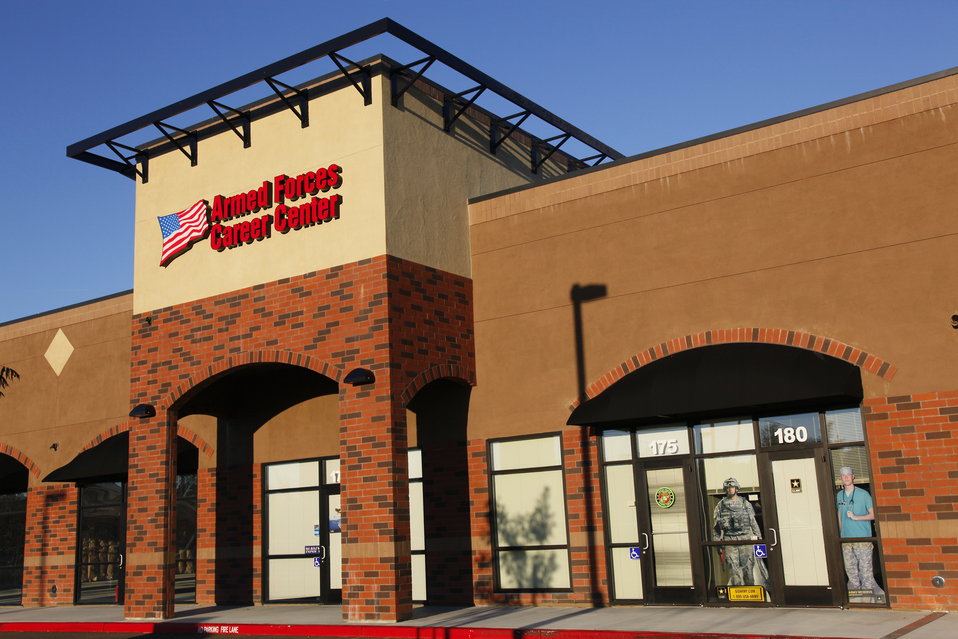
SACRAMENTO, Calif. (Nov. 29, 2010) – The front entrance of the new Armed Forces Career Center at Veterans Plaza in Roseville, Calif. The facility was designed by the U.S. Army Corps of Engineers Sacramento District and contains recruiting stations representing the Navy, the Marines, the Air Force and the Army.